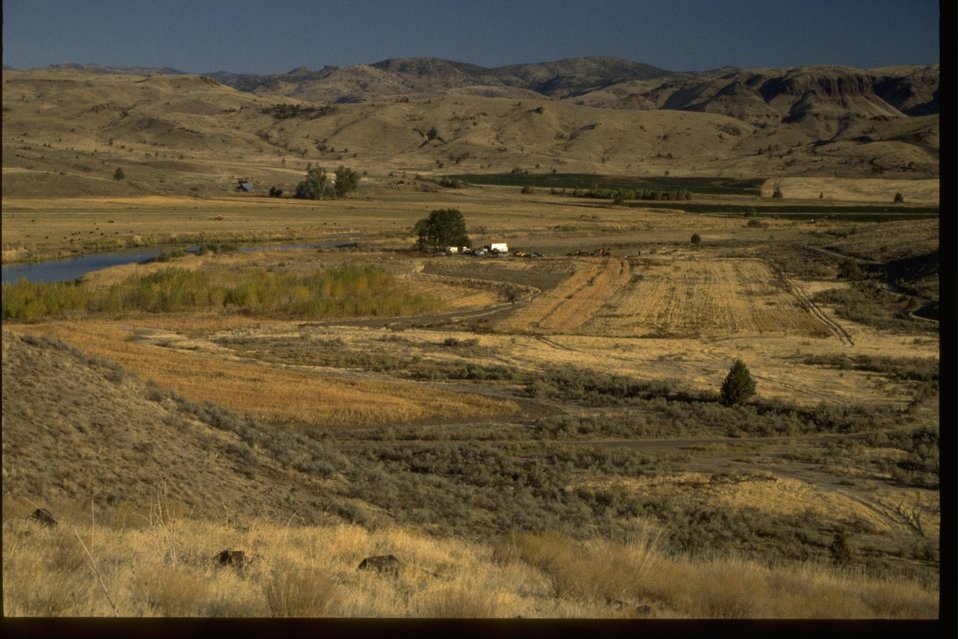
View from hill of BLM Clarno fields, cottonwood orchards, wildlife (grain & sunflower) fields, and the John Day River.